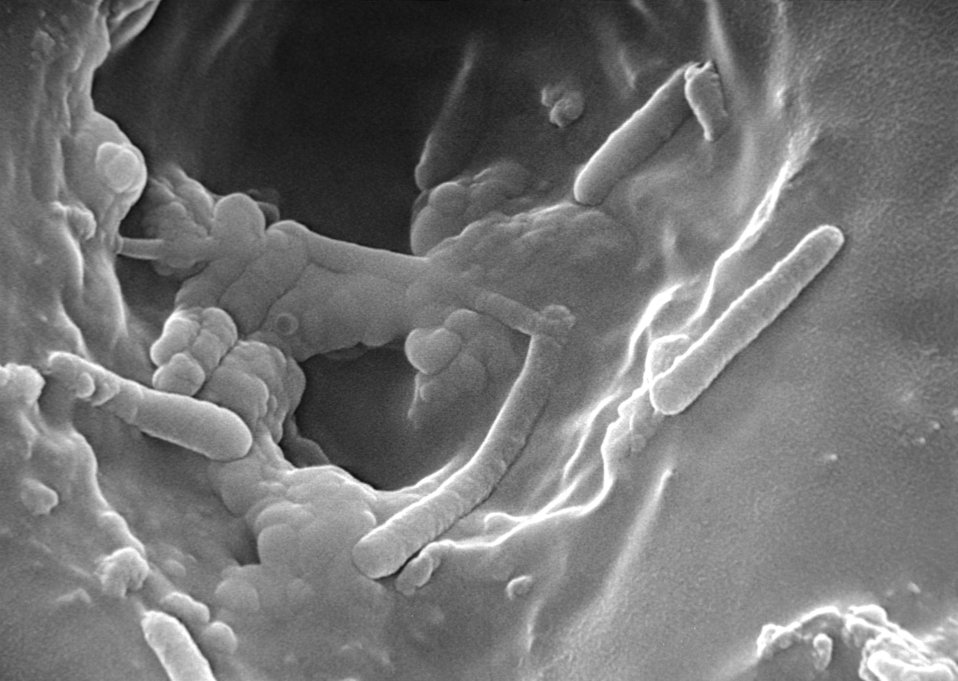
Scanning electron micrograph (SEM) of Pseudomonas aeruginosa bacteria.